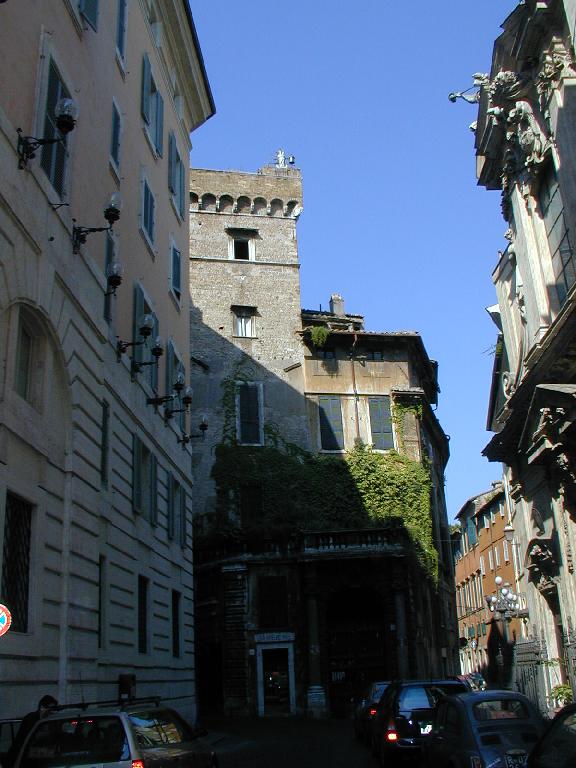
000815 8 torre della scimmia